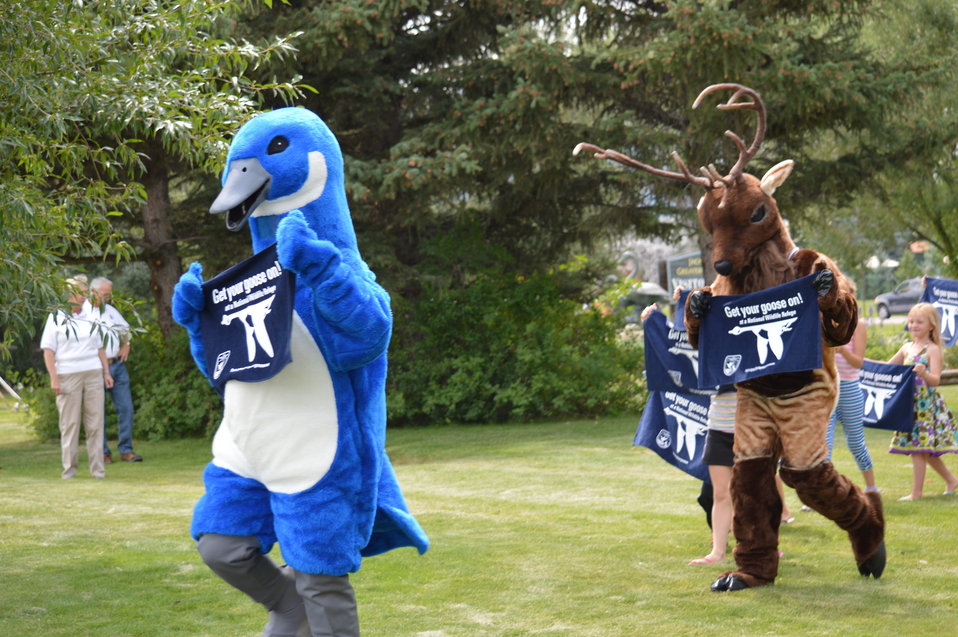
Get Your Goose On! - National Elk Refuge Style

On August 10, 2012 the U.S. Fish and Wildlife Service and Partners celebrated the 100 year anniversary of the establishment of the National Elk Refuge. In these photos, young attendees, along with Puddles the Blue Goose and the National Elk Refuge's mascot, showed us how to Get Your Goose On! with style.